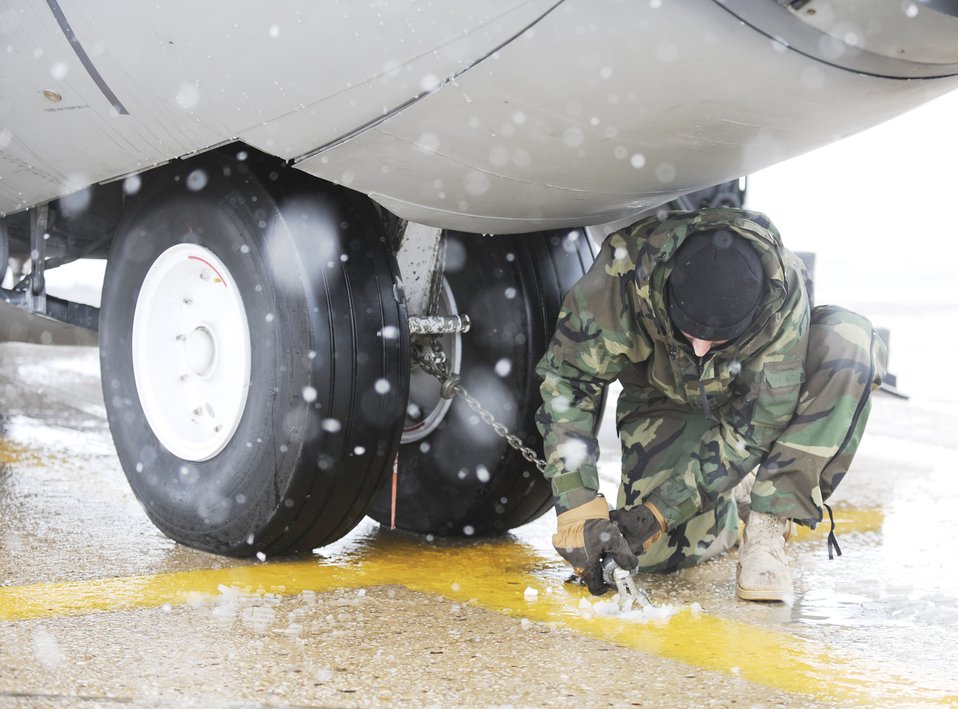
New York maintainers secure aircraft

An Airman with the 106th Aircraft Maintenance Squadron works to secure a HC-130 Hercules Feb. 26, 2010 during a snowstorm at the New York National Guard's 106th Rescue Wing at Francis S. Gabreski Airport in Westhampton Beach, N.Y.